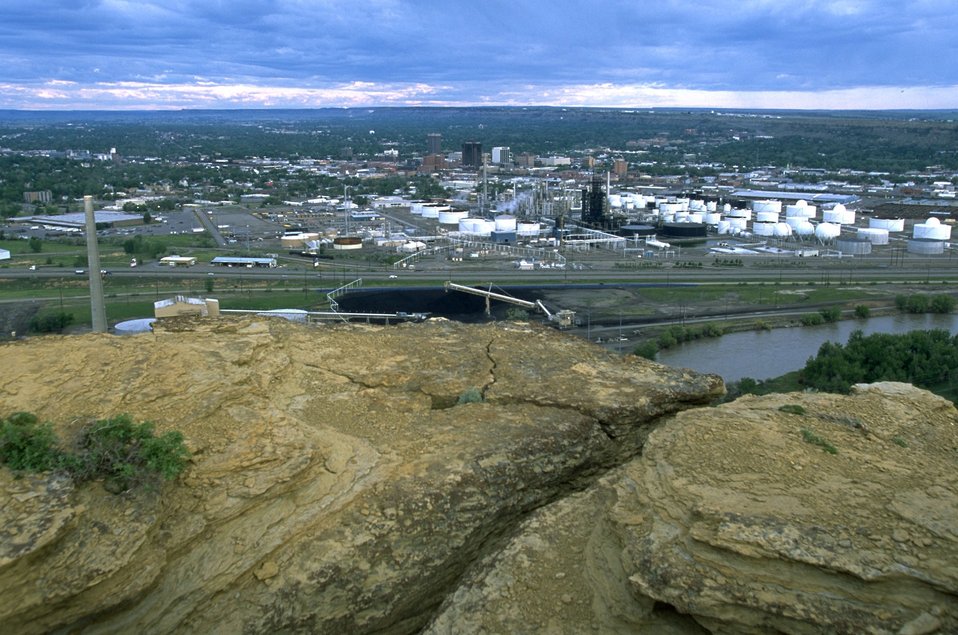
Looking over the Yellowstone River to Billing MT and the Corette steam electric generating plant (left and center) and the Conoco oil refinery (right).